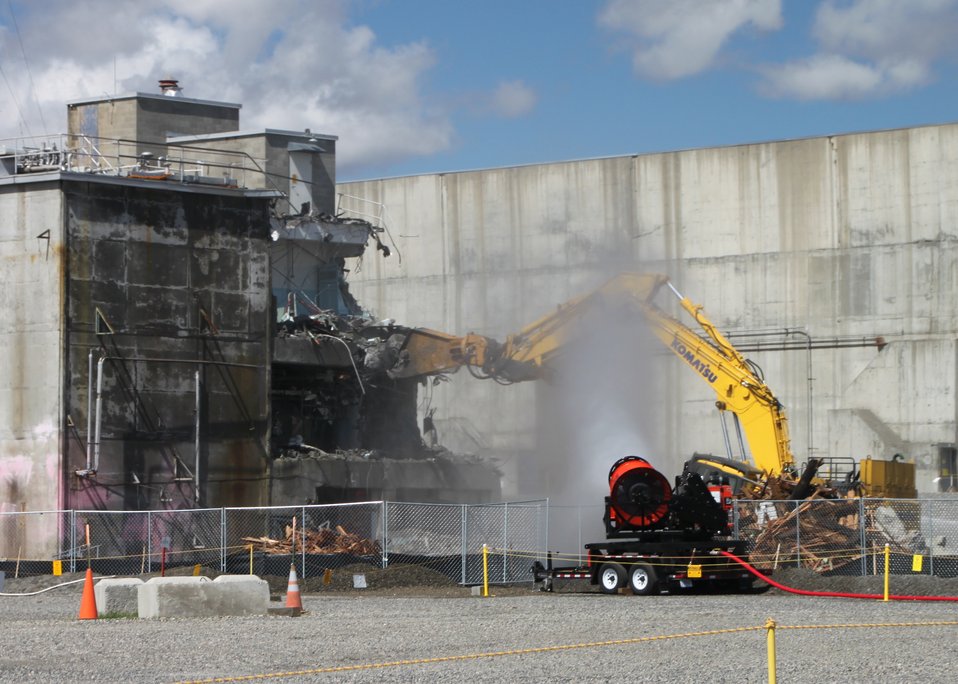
224-U demolition begins

Workers demolish the 224-U facility, one of five ancillary facilities adjacent to Hanford’s U Plant.